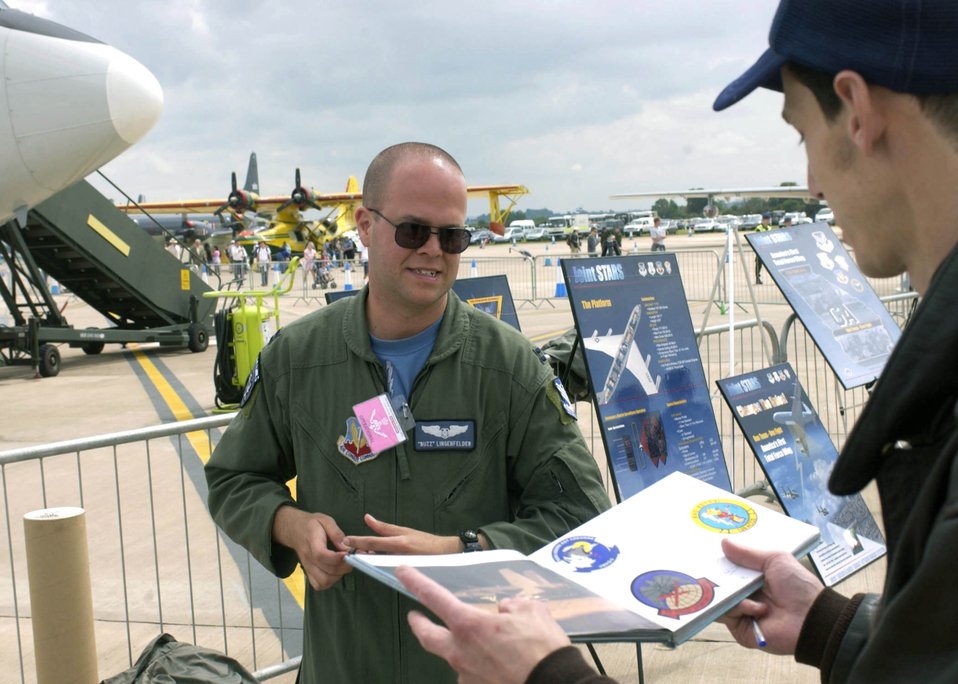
A revealing tattoo

ROYAL AIR FORCE FAIRFORD, England -- Capt. C.J. Lingenfelder signs a book for a military aircraft enthusiast here during the Royal International Air Tattoo here July 16 to 18. More than 100,000 people visited the air show daily to see 350 aircraft from 15 nations and 30 different service branches. Captain Lingenfelder is an E-8 Joint Stars aircrew member assigned to the 128th Air Combat Control Squadron at Robins Air Force Base, Ga.